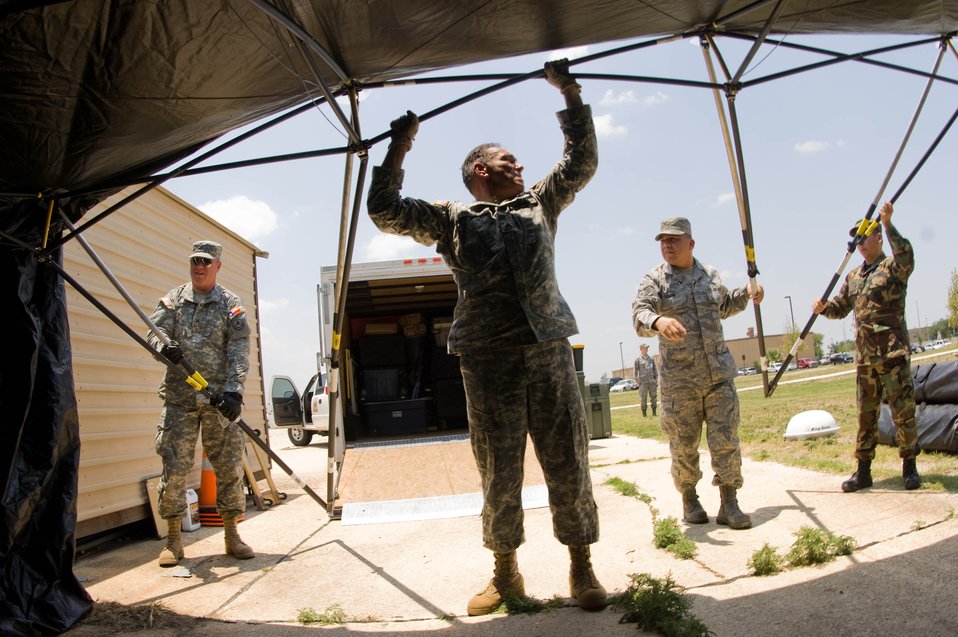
Joint Teams prepare for Hurricane Dolly

(Left-right) Army Sgt. Marc Jones, Army Staff Sgt. Robert Ribeiro, Staff Sgt. Gonzalo Roman and Master Sgt. Mark Martinez set up a base-X tent, part of the Joint Incident Communications Capability (JICC) that will provide video teleconference, satellite and cellular communications next to the Emergency Operations Center at Brooks City-Base in San Antonio July 22. The Texas Army National Guard is part of the Standing Joint Interagency Task Force-Texas at Camp Mabry, Texas. Sergeants Jones and Ribeiro are stationed at Bee Caves Armory, Austin, Texas. Sergeants Roman and Martinez are from the Air National Guard's 149th Communications Flight at Lackland Air Force Base, Texas. Once completed the JICC will provide 2000 sq. ft. of portable or tented floor space on the lawns in front of the EOC.